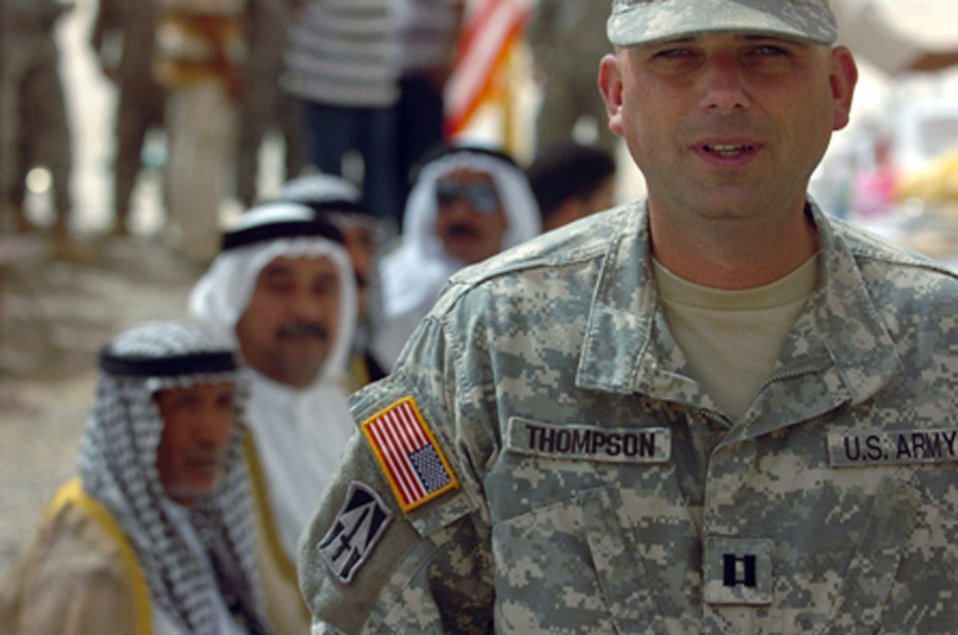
Recycling contract turns trash into treasure

Army Capt. Lynn Thompson poses July 11 during a ribbon-cutting ceremony for an Iraqi-run recycling center on Joint Base Balad, Iraq. Captain Thompson, a Soldier from the Indiana National Guard's 76th Infantry Brigade Combat Team, helped ensure the contract with the Iraqi-based Almandhour United Company moved forward through the Iraqi-Based Industrial Zone initiative. The Air Force's Joint Contracting Command-Iraq also assisted with drawing up the contracts, which will allow the recycling center to ship more than a ton of aluminum, steel, cardboard and plastics products off Joint Base Balad daily and sell them on the Iraqi market. Captain Thompson is the waste management officer for Joint Base Balad.